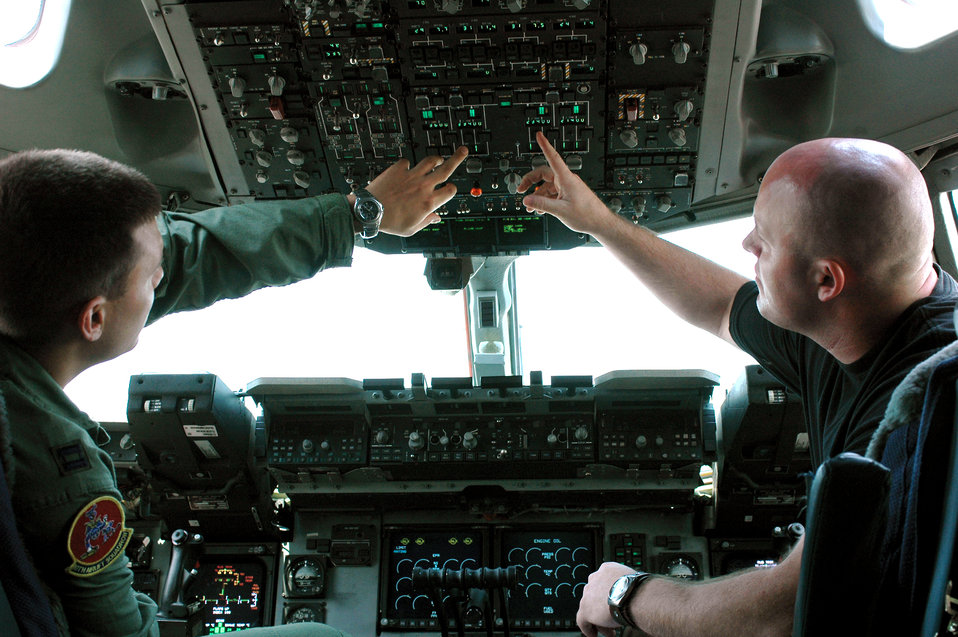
A simple test can save a life

Staff Sgt. Roy Eilenstine, right, discusses a fuel transfer on a C-17 Globemaster III with Capt. Glenn Garcia at Yokota Air Base, Japan. Sergeant Eilenstine recently returned to work as a crew chief with the 730th Air Mobility Squadron after donating bone marrow. Captain Garcia is a pilot with the 10th Airlift Squadron at McChord Air Force Base, Wash.